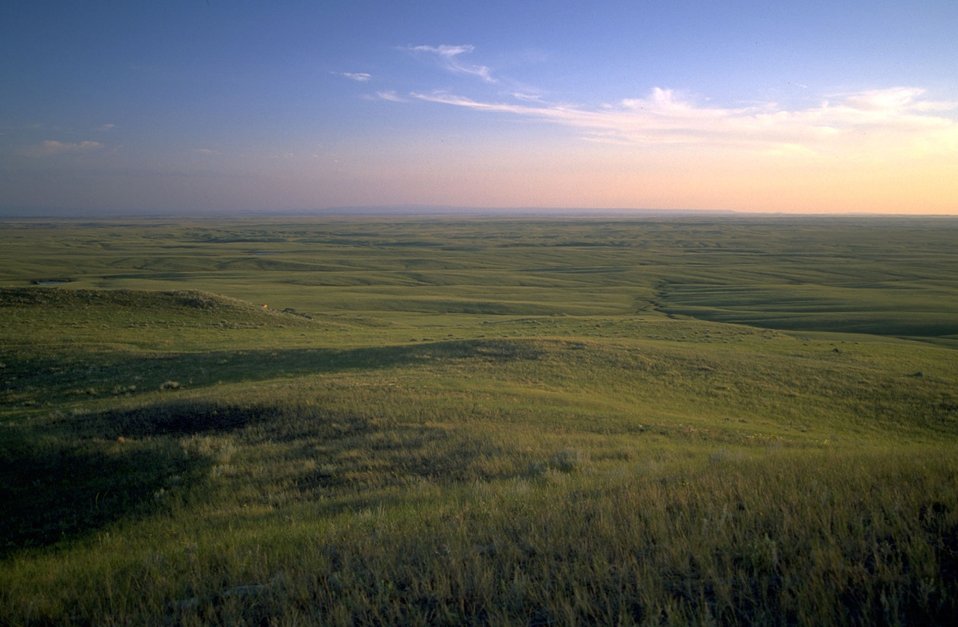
Grassland Vista 30 miles north of Belle Fourche